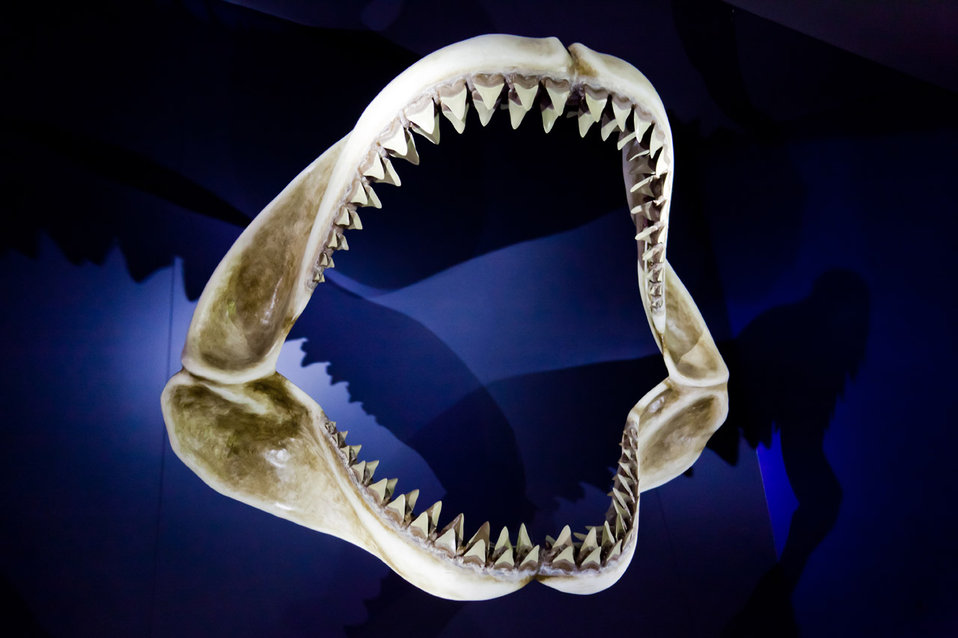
Shark jaws whith sharp teeth.